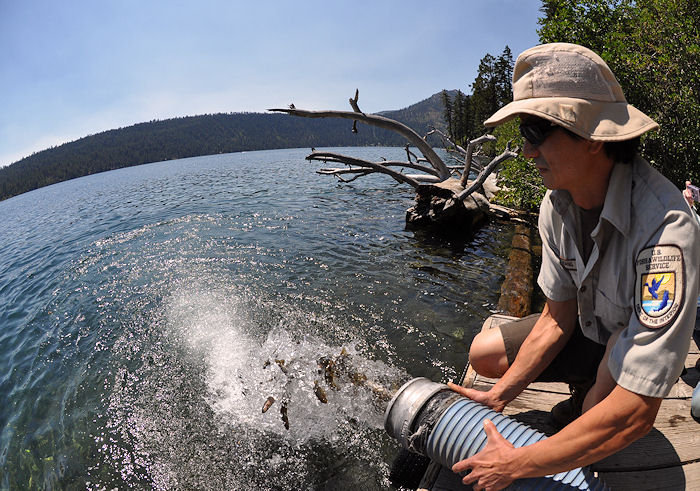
Stocking Lahontan cuttroat trout in Fallen Leaf Lake

Stocking more than 8,000 Lahontan cutthroat trout in Fallen Leaf Lake, Tahoe Basin, Calif., September 10, 2010.